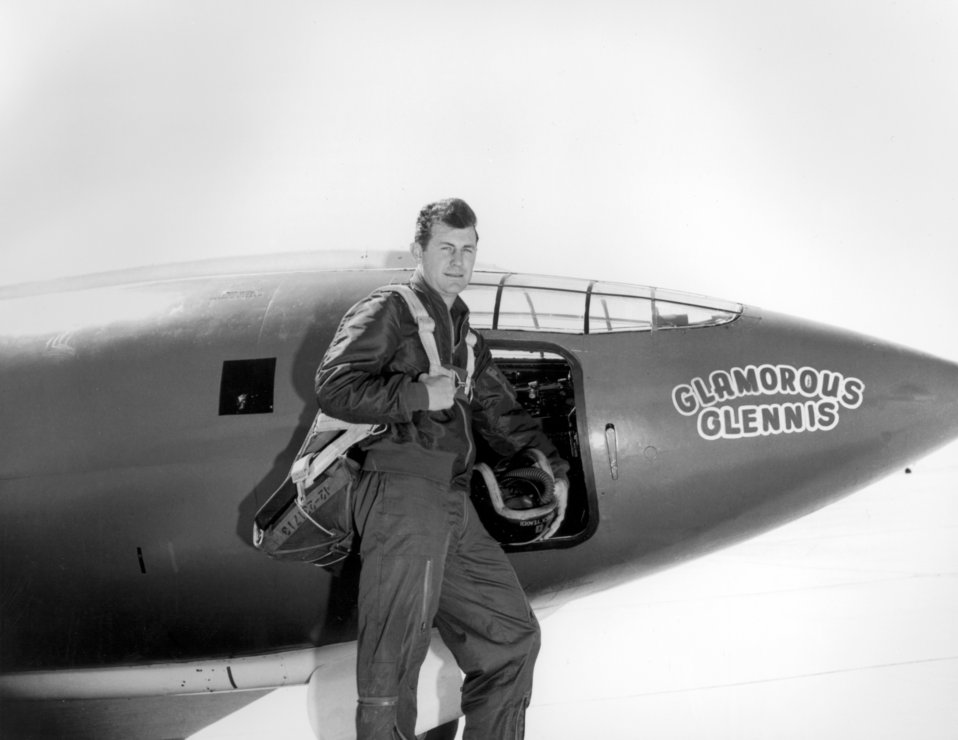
Chuck Yeager

1940's -- Chuck Yeager standing in front of the Bell X-1, nicknamed